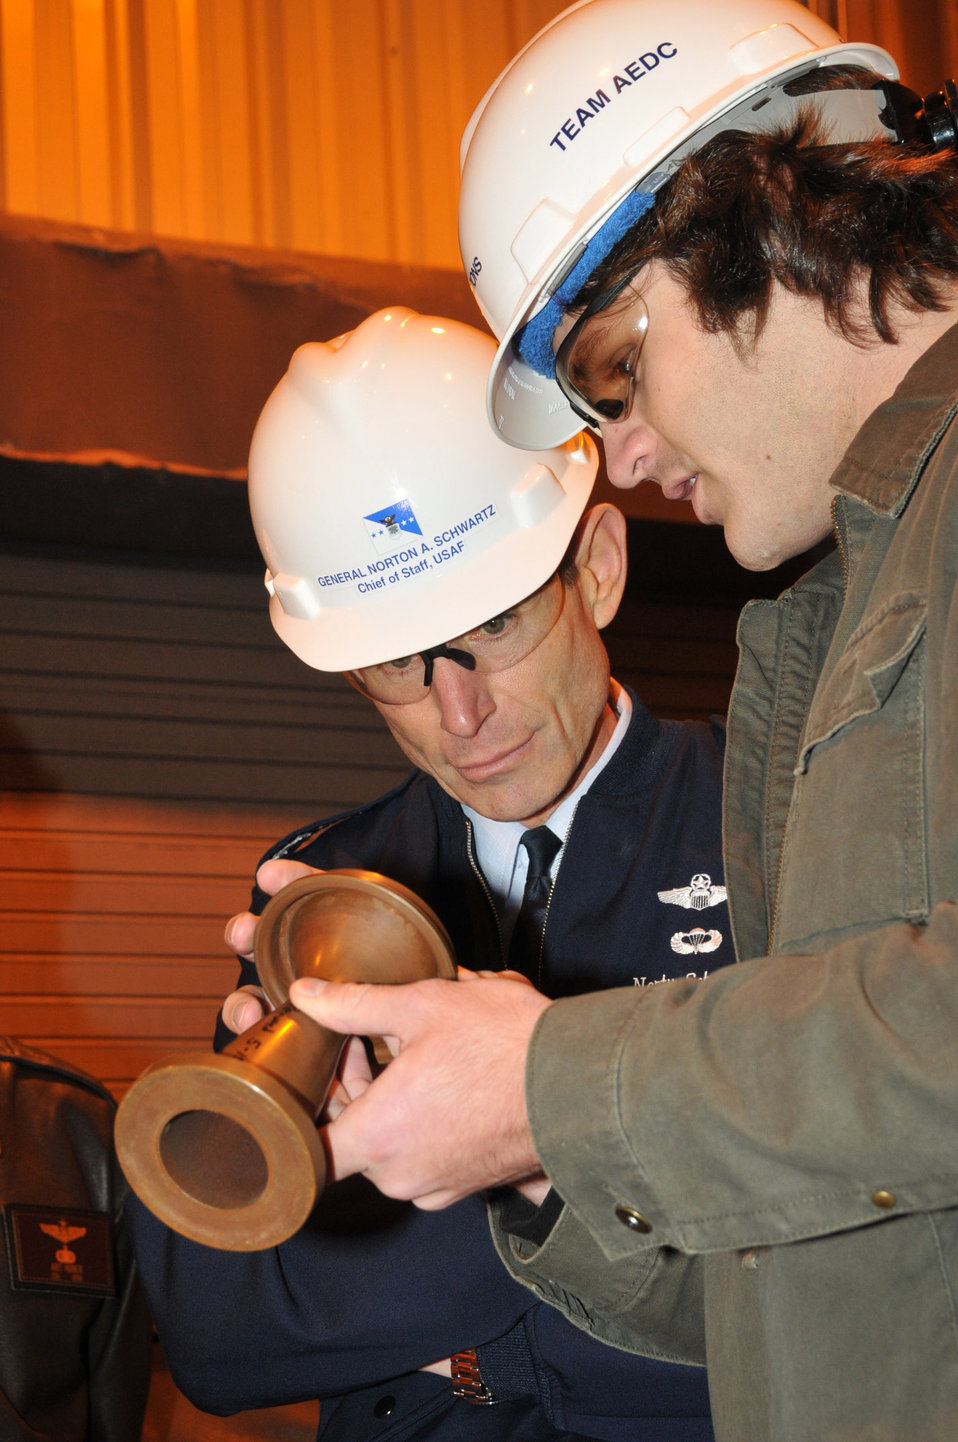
Air Force chief of staff visits Arnold

Gary Hammock explains how the H3 Arc Heater Facility works to the Chief of Staff of the Air Force Gen. Norton Schwartz Nov. 17 at Arnold Air Force Base, Tenn. Mr. Hammock is an arcs and ranges analysis engineer.